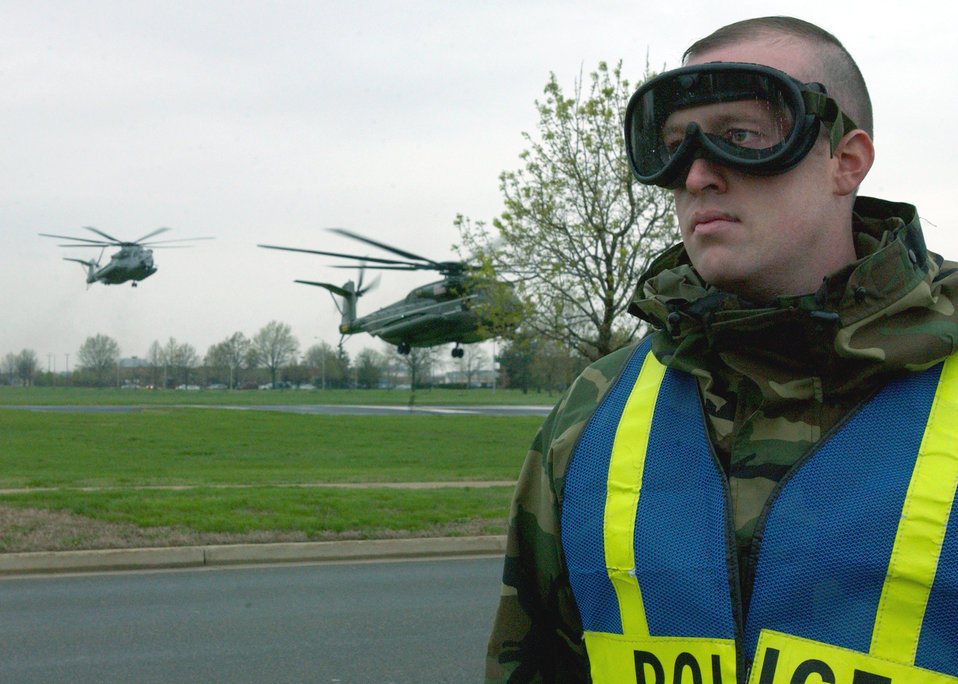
Here come the Marines

BOLLING AIR FORCE BASE, D.C. -- Wearing protective goggles to shield his eye against possible flying debris from propeller backwash, Staff Sgt. Walter Feno stands by to guide traffic April 14 as Marine helicopters land here. Sergeant Feno is assigned to the 11th Security Forces Squadron.